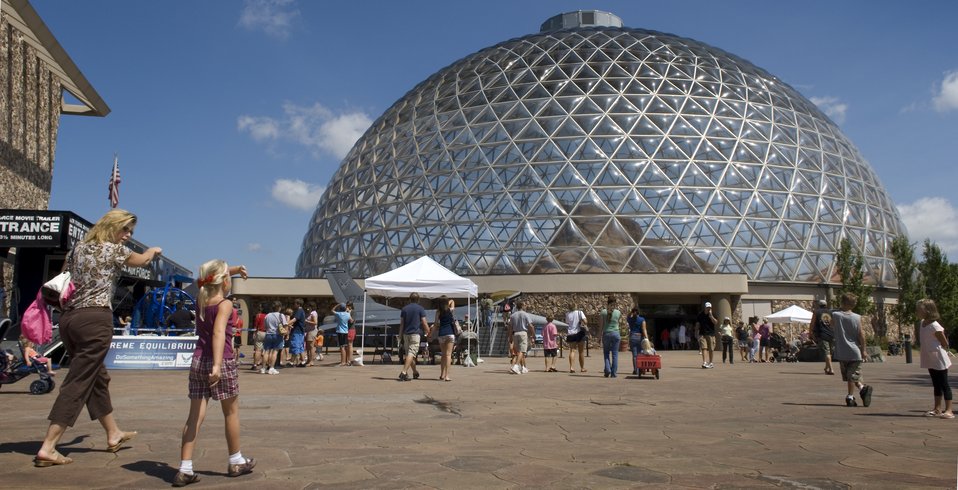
Air Force Week in the Heartland reaches out to Omaha zoo

Henry Doorly Zoo visitors see Air Force displays during Air Force Week in the Heartland Aug. 12 in Omaha, Neb. Zoo vis itors had the chance to see the Do Something Amazing display, a motion simulator and video simulators during Air Force Week in the Heartland.